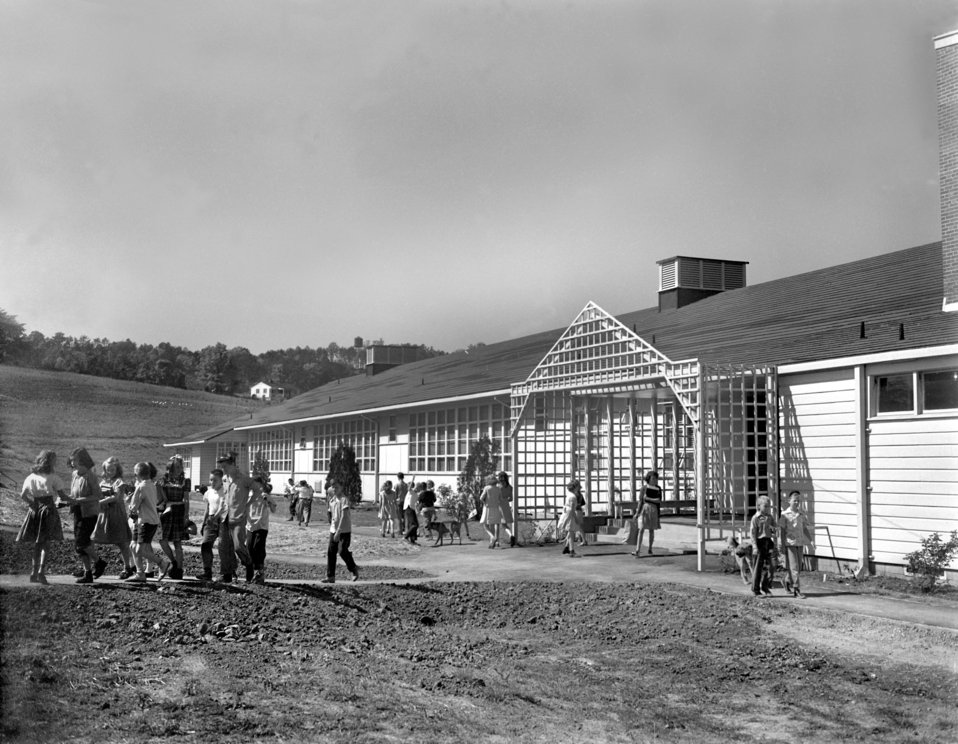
Pine Valley School Oak Ridge 1947

3457-4b DOE photo Ed Westcott 5-13-1947 Oak Ridge Tennessee